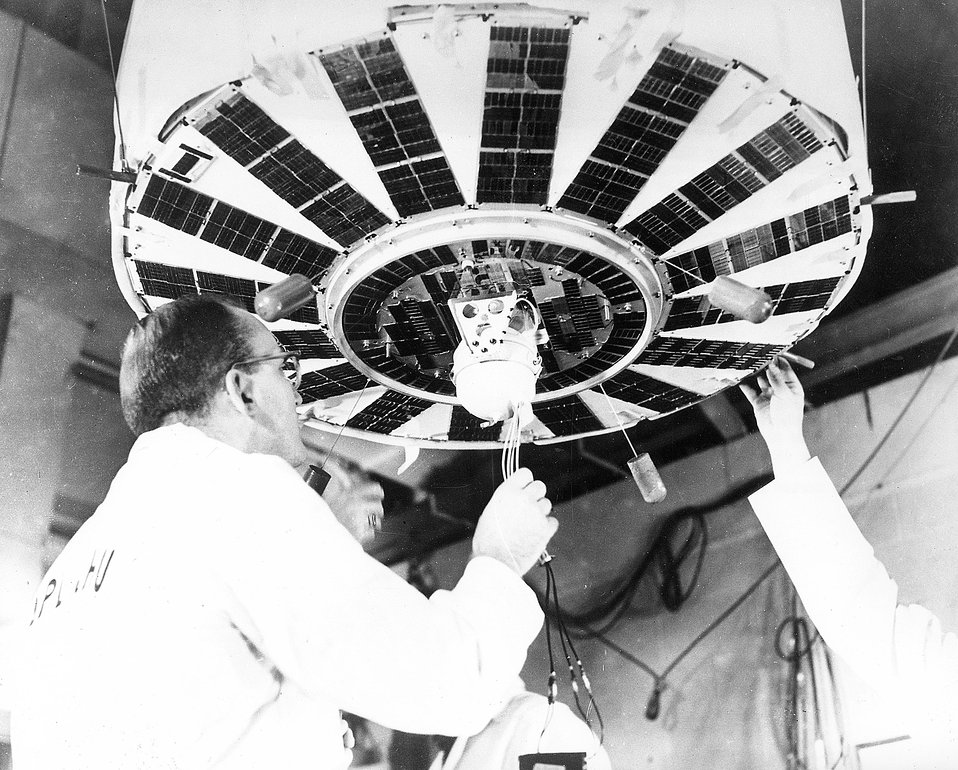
The tiny SNAP atomic generator is fastened to the base of TRANSIT satellite for vibration tests at Johns Hopkins.